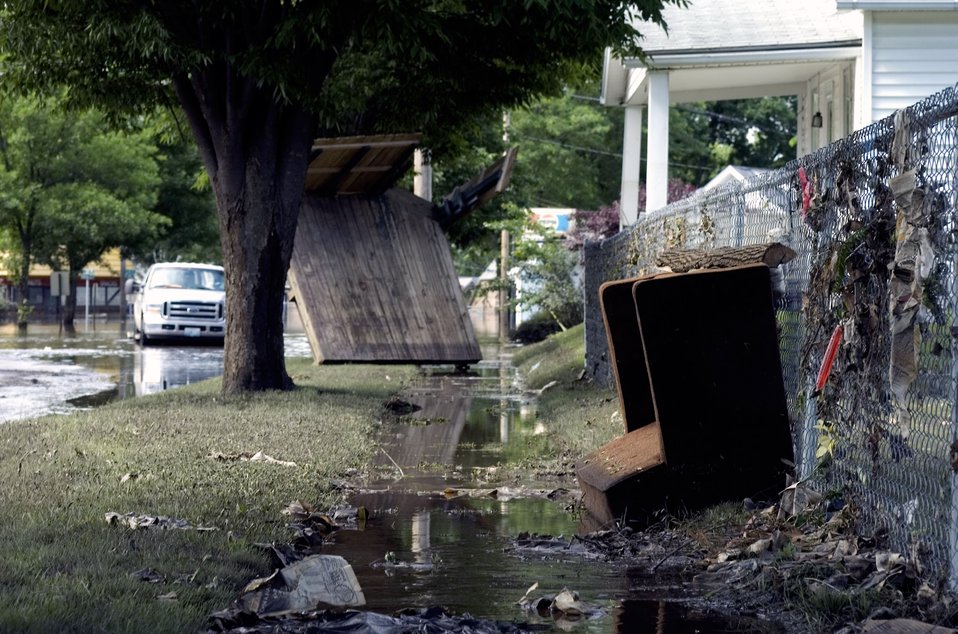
Air National Guard shores up as flood recedes

Debris and water surround hundreds of homes June 15 in Cedar Rapids, Iowa. More than 150 Air National Guardsmen arrived in Cedar Rapids to help secure and recover areas that were affected by flood waters.